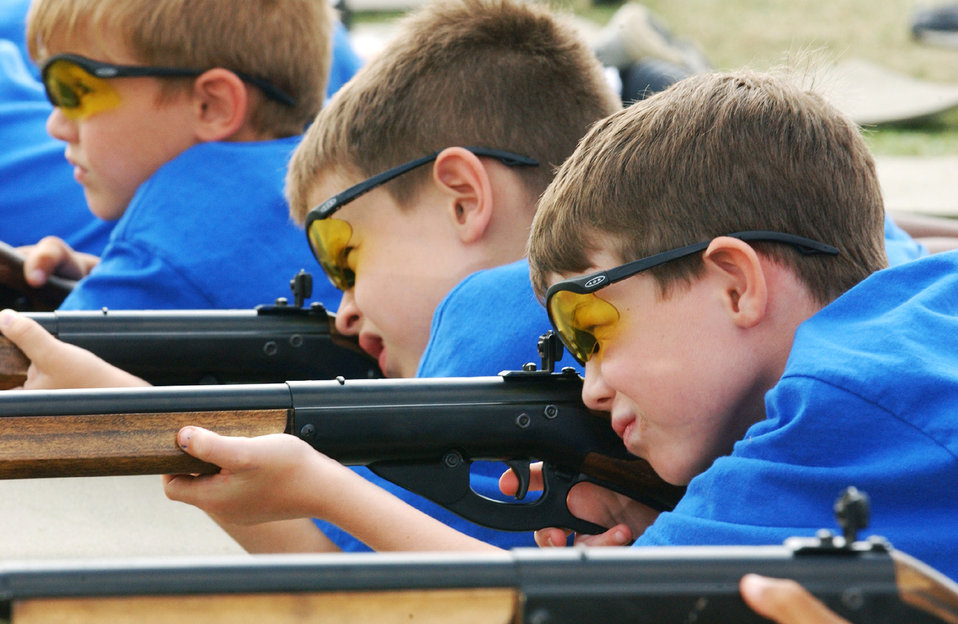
Taking aim

ROYAL AIR FORCE FELTWELL, England -- Duncan York (right), John Slife (middle) and Triston Williams aim their rifles at the BB gun and archery station here July 28. The boys were shooting the rifles during a week long